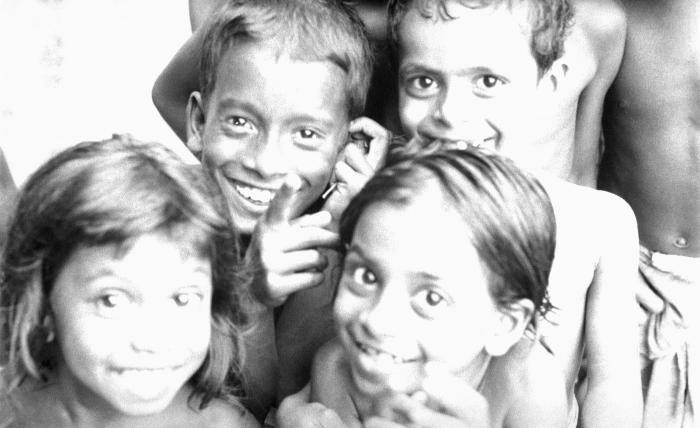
Bright-eyed Bangladesh children such as these were always eager to pose for pictures on the photographer's trips through the country. This photograph provided by Dr. Stan Foster, and captured by Pierre Claquin, M.D., B.A.C., who at the time was a member of the World Health Organization's Smallpox Eradication Program. It was part of a series photographed by former E.I.S. officer, Stanley O. Foster M.D., M.P.H., and was one of a series entitled 'The Story of One Smallpox Jeep', which depicted the travails faced by the jeep, and its occupants of public health practitioners, as they road through the Bangladesh countryside in an attempt to eradicate smallpox from the country.